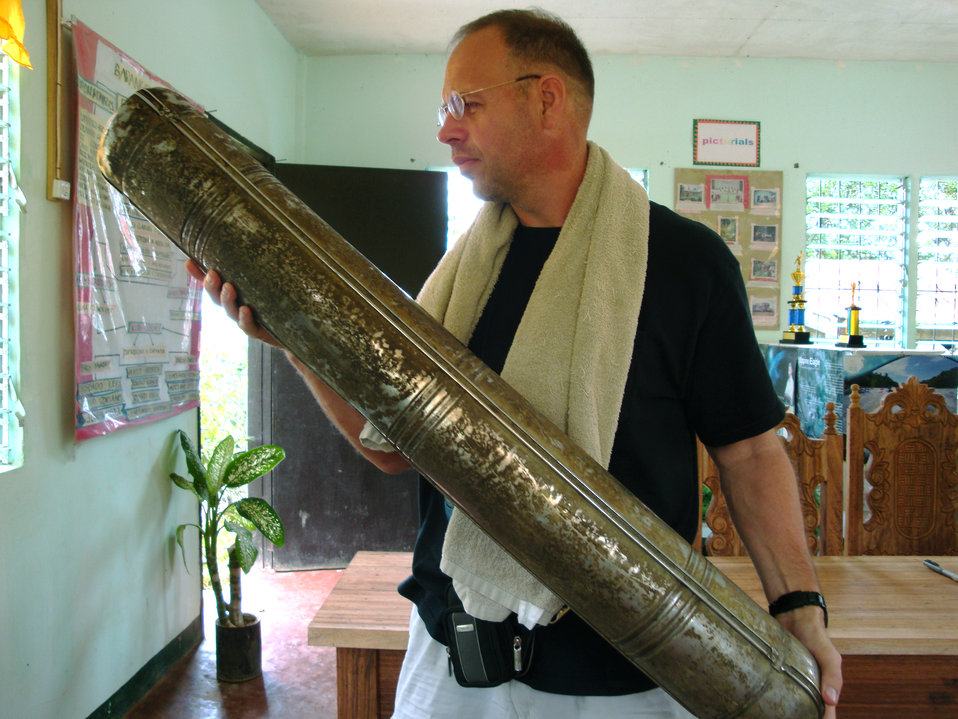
Sergeant travels to Philippines in search of MIA remains

Robert Lucke holds an oxygen bottle from the 1940s during a mission to find the downed crew of a C-47 Skytrain that had crashed during World War II April 6, 2010, in Tacloban, Philippines. A local resident claims that it was used to store vinegar.